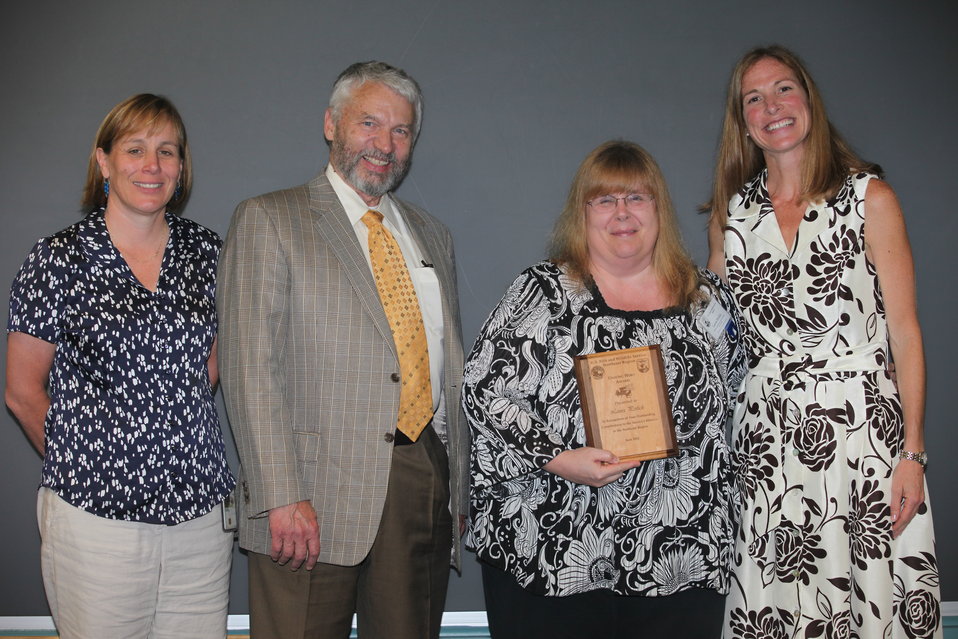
Laura Perlick of the New Jersey Field Office recieved a Region 5 Unsung Hero Award.
From left to right: Deputy Regional Director Deb Rocque, Deputy Director Rowan Gould, Laura Perlick, and Regional Director Wendi Weber